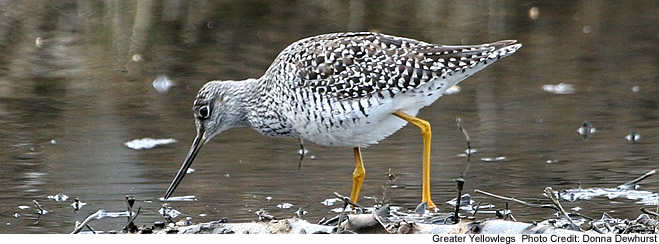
Baskett Slough National Wildlife Refuge - Greater Yellowlegs

It is common to see the Greater Yellowlegs bird in the Baskett Slough National Wildlife Refuge during the spring, summer and fall months.